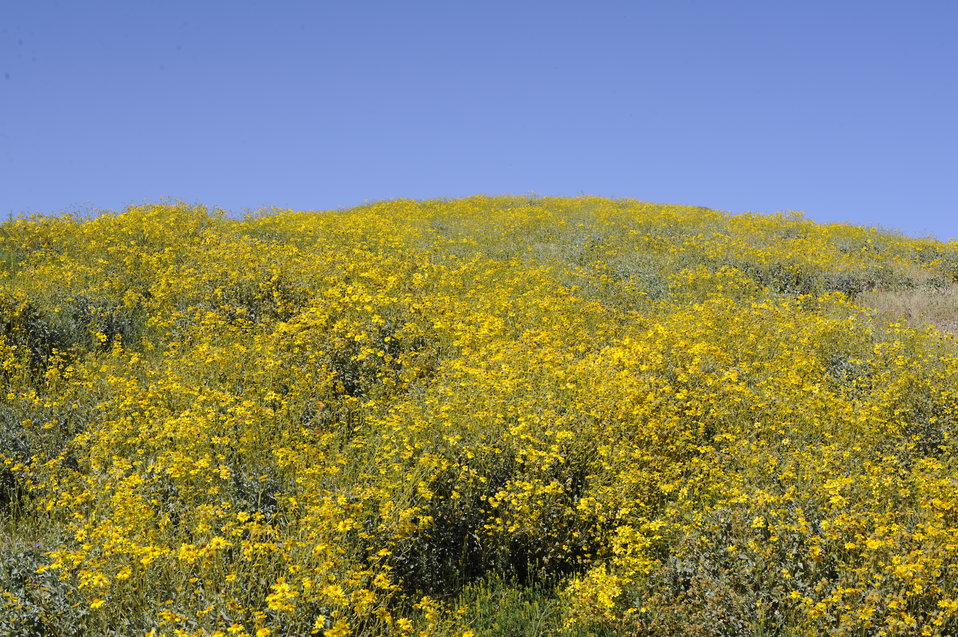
Brittlebush

A field of brittlebush in the Sonoran Desert on the Cabeza PrietaNational Wildllife Refuge.